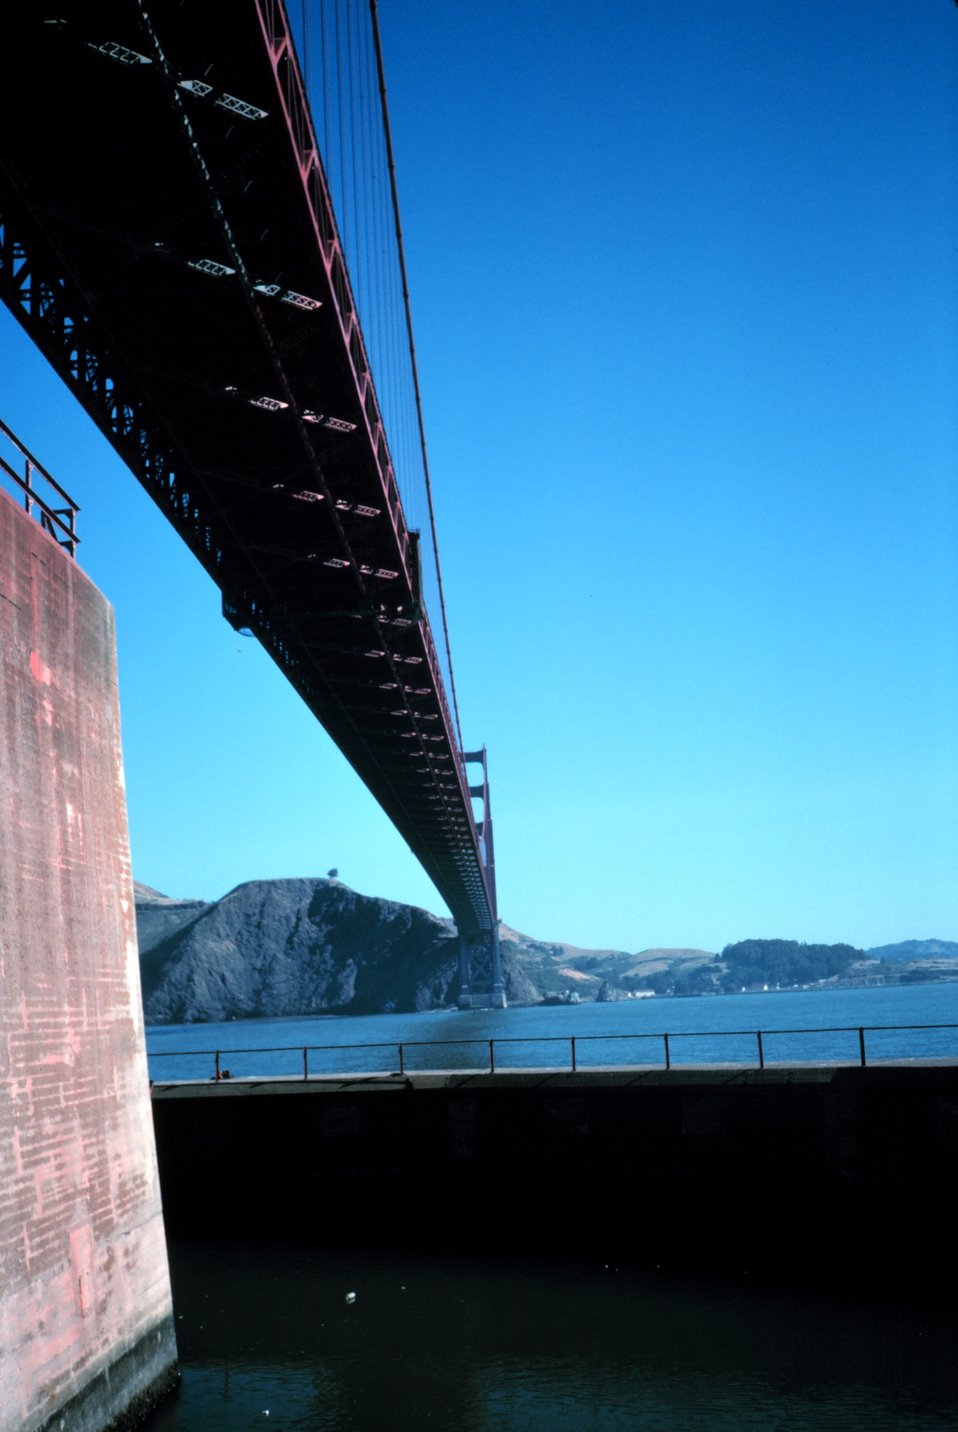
The Golden Gate Bridge as seen from the bridge's south pier looking north.